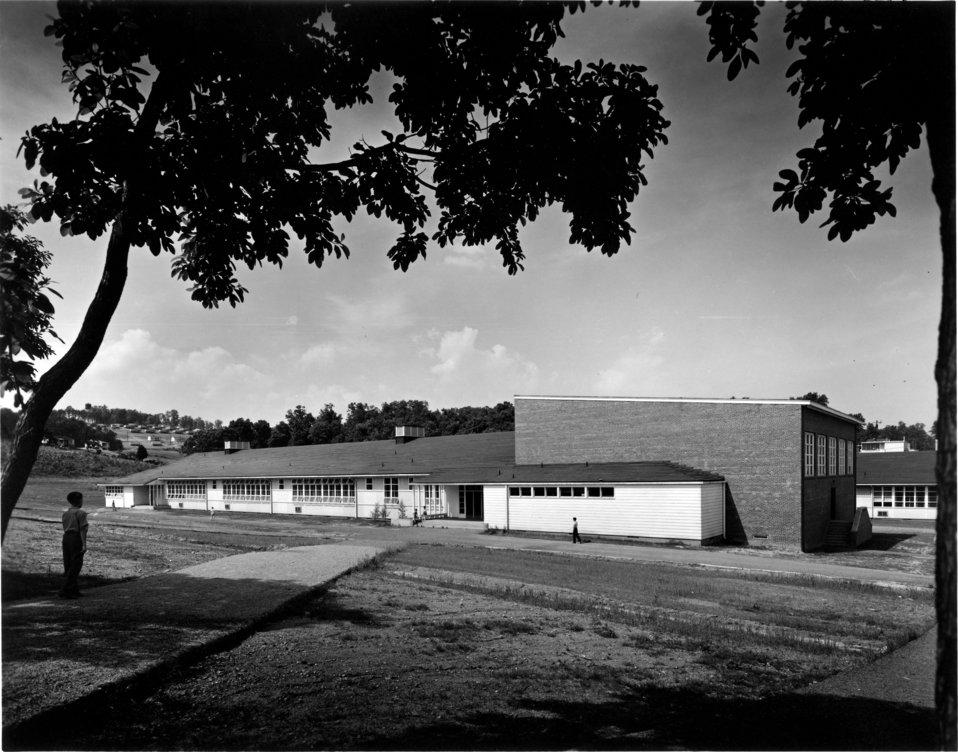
Elm Grove Elementary School Oak Ridge 1944

8014-2 DOE photo Ed Westcott 1944 Oak Ridge Tennessee